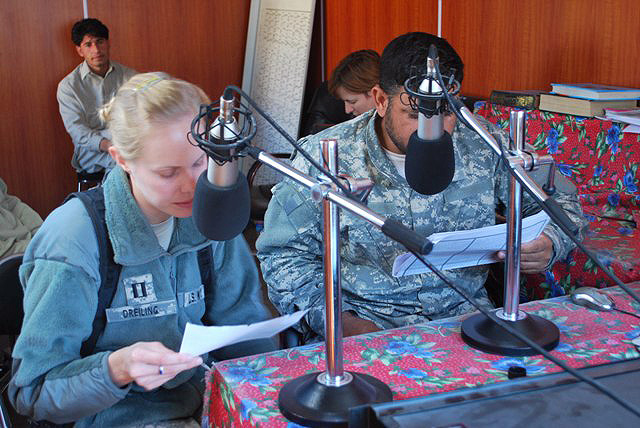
Team uses Afghan airwaves to counter flu misinformation

Navy Lt. Jennifer Dreiling, a senior medical officer for the Nuristan Provincial Reconstruction Team, records a radio message Nov. 19, 2009, on Radio Kalagush, a U.S.-funded Afghan radio station that broadcasts from Forward Operating Base Kalagush in eastern Afghanistan's Nuristan province, educating locals about the H1N1 flu virus.